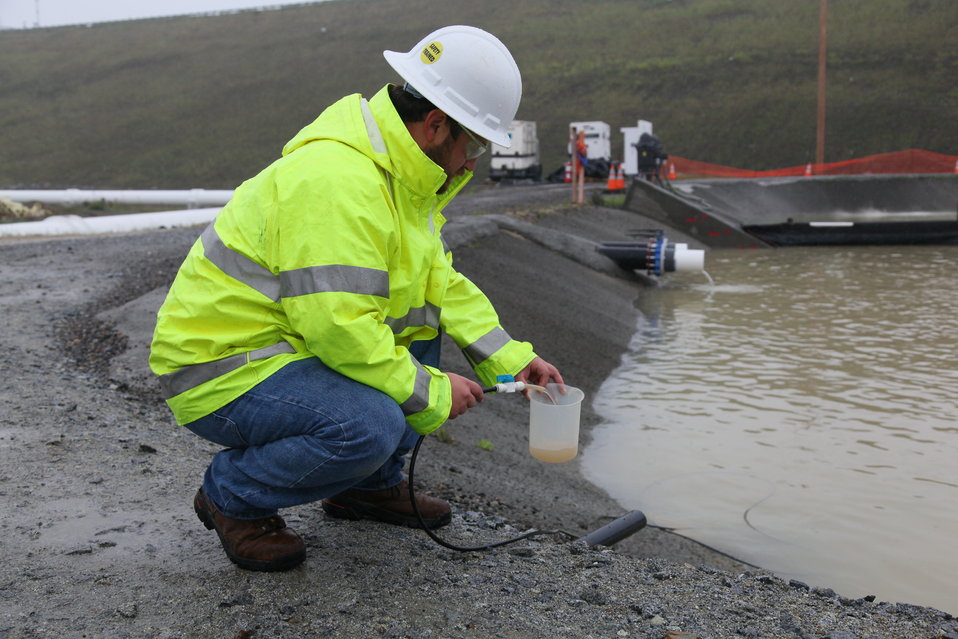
Taking water samples from treatment ponds

Patrick Sparks of Active Treatment Systems Inc., a contractor for the U.S. Army Corps of Engineers Sacramento District, collects a sample from a runoff water pond at the excavation site for the Folsom Dam auxiliary spillway in Folsom, Calif., March 15, 2012. Runoff that enters the excavation site is treated, monitored and filtered before being pumped into Folsom Lake. The spillway, scheduled to be ready for use in 2017, will allow Folsom Dam to release water sooner and more safely. The project is part of the Folsom Dam Joint Federal Project, a joint effort of the U.S. Army Corps of Engineers Sacramento District, the U.S. Bureau of Reclamation, the Central Valley Flood Protection Board and the Sacramento Area Flood Control Agency to improve the safety of the dam and reduce flood risk for the greater Sacramento area.